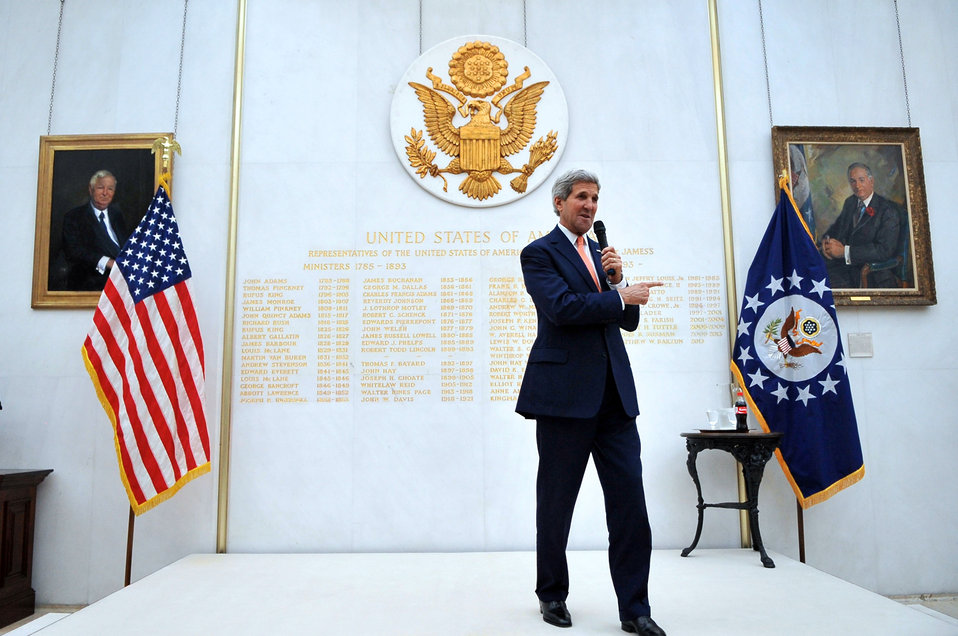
Secretary Kerry Addresses Embassy London Staff and Families

U.S. Secretary of State John Kerry addresses the staff, family, and friends of Embassy London during a visit to the United Kingdom on June 13, 2014.